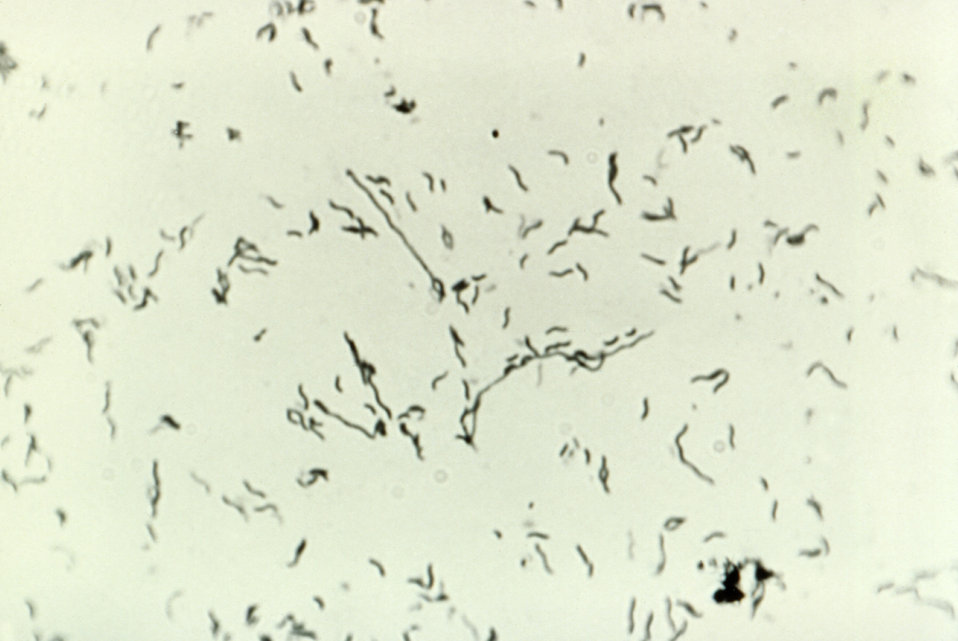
This photomicrograph depicts findings observed in a 48hour culture of Campylobacter jejuni bacteria revealing characteristic 'thin', 'comma-', 'S-' or 'gull winged-shaped' forms displayed by this bacterium.